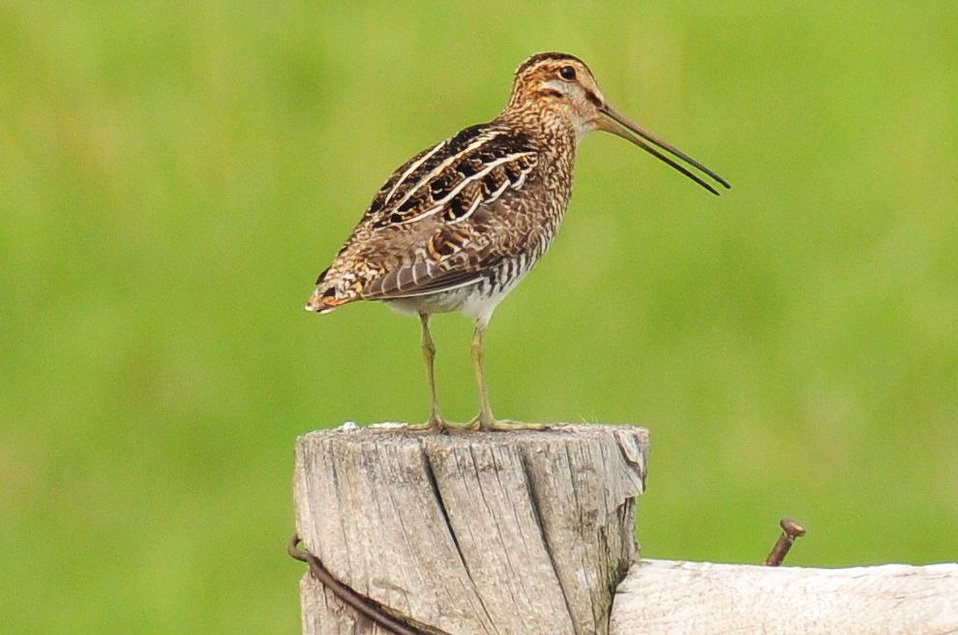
Wilson's Snipe Lacreek NWR